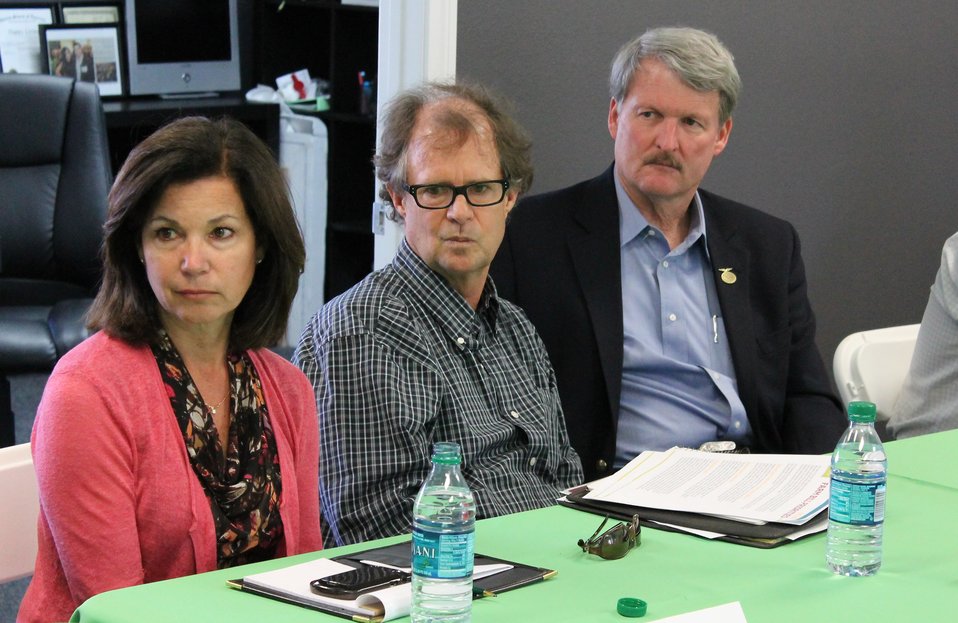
anic producers listen to Agriculture Secretary Tom Vilsack at a roundtable discussion hosted by GoGreen Agriculture in Encinitas, CA on Apr. 17, 2013. GoGreen Agriculture is a family owned and operated hydroponics organic producer of lettuce, kale and spinach. GoGreen builds mini-farms in or near large cities and sells the premium produce locally. This eliminates major transportation time and cost, improves freshness, reduces petroleum consumption, and provides local jobs.